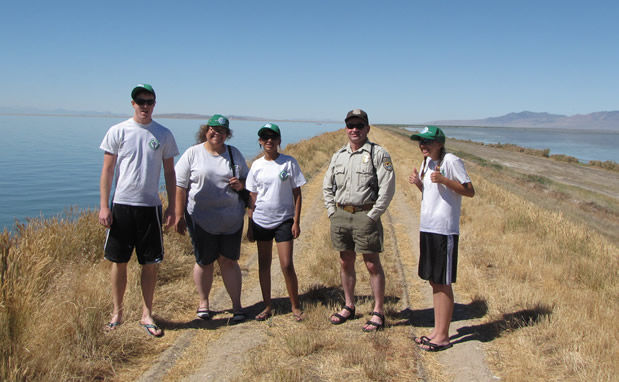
Youth Conservation Crew

All of the projects during the eight week Youth Conservation Corps program allowed the crew to see the progress of their work and value the nature of the work accomplished.